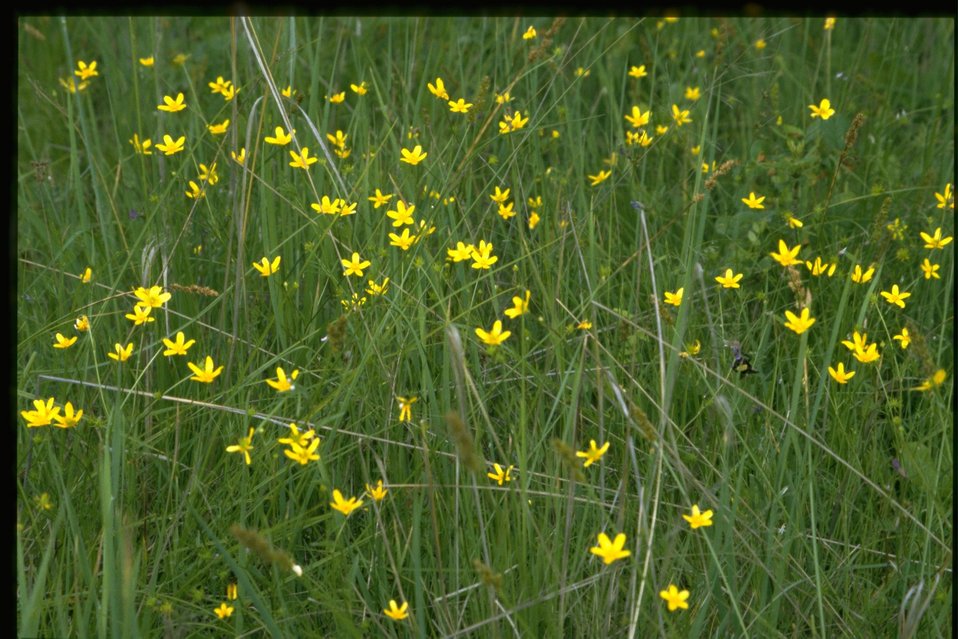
Medium shot of Ranunculus occidentalis.